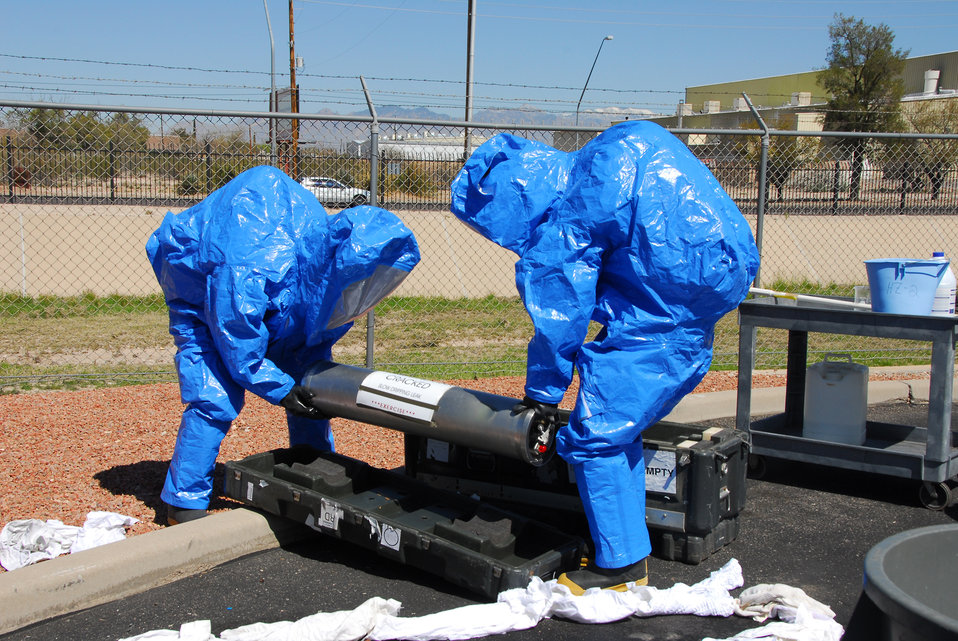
Bio-safety first

First responders from the base fire station contain a